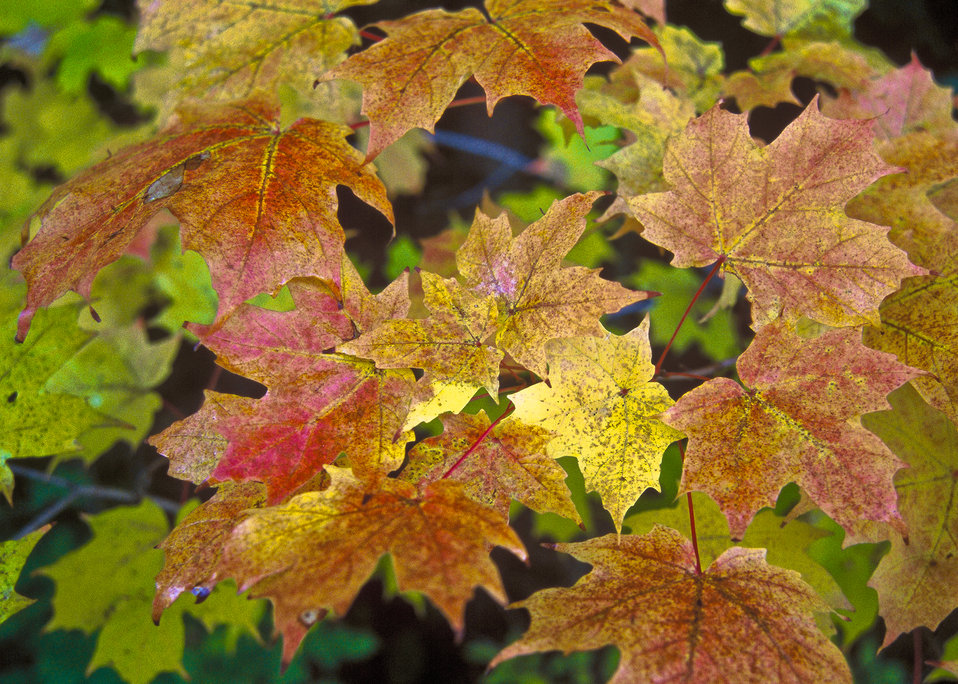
Maple leaves of many colors offer an unending palette of color in the Hiawatha National Forest on the Upper Peninsula of Michigan.